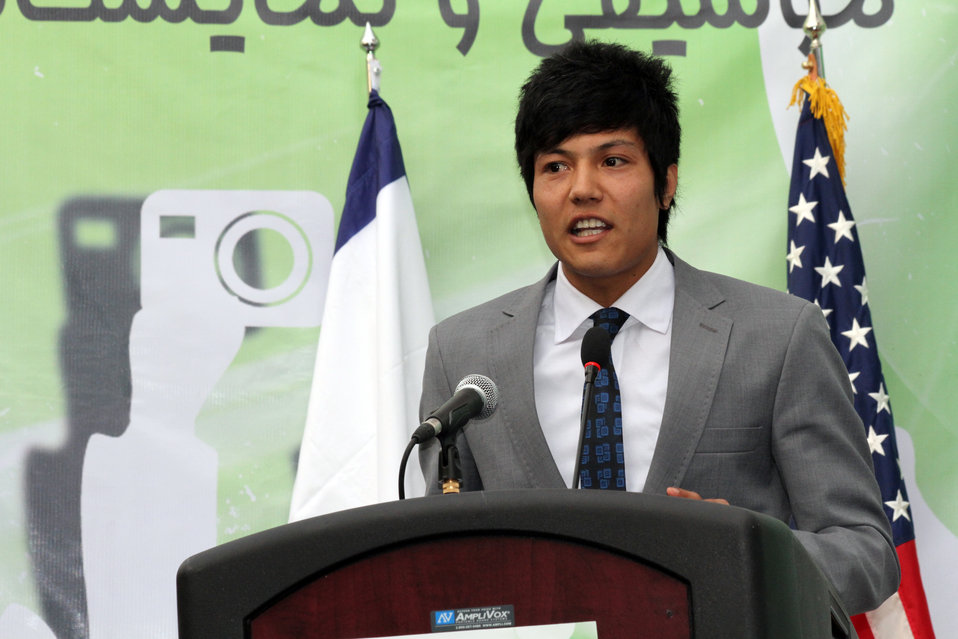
Afghan Youth Festival

Internews - USAID